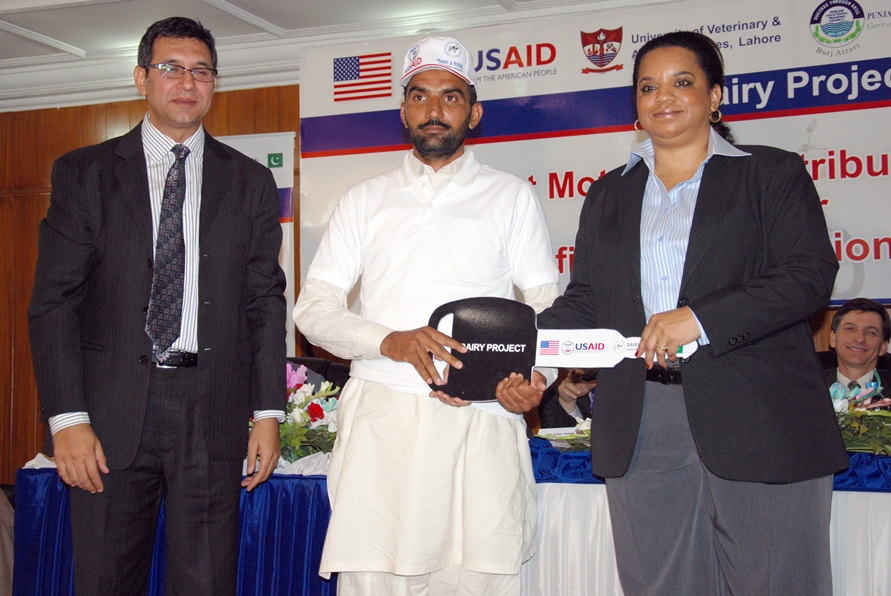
Ms. Gail Spence (Acting Director USAID Punjab) presenting motorcylce keys to successful AI technician